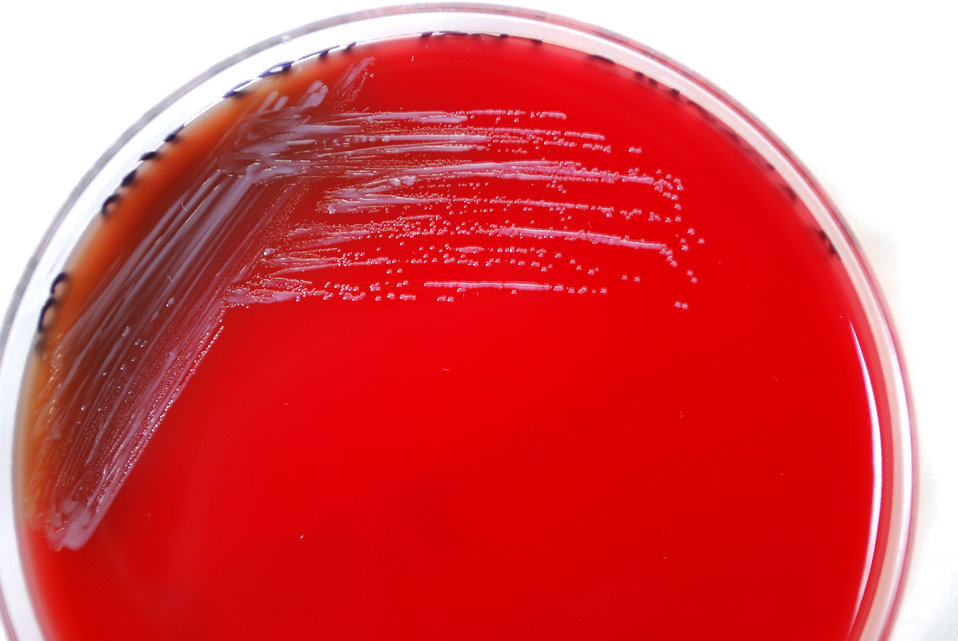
An enlarged view of PHIL 12229, this photograph depicts the colonial morphology displayed by Gram-negative Brucella abortus bacteria, which was grown on a medium of sheep blood agar (SBA), for a 48 hour time period, at a temperature of 37�C, while incubated in a CO2 incubator.How is brucellosis transmitted to humans, and who is likely to become infected?